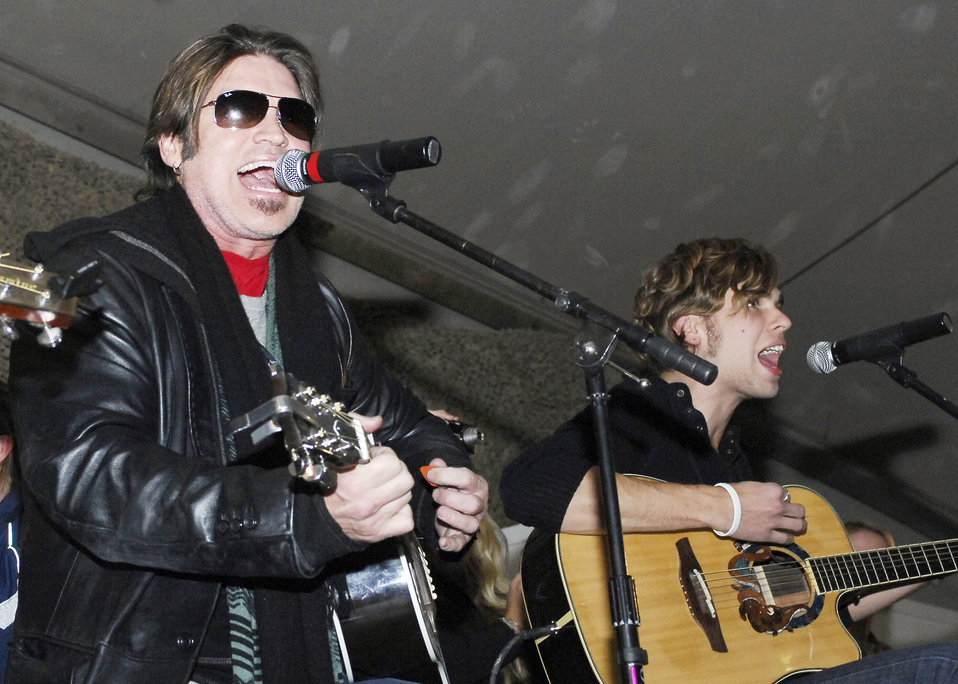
USO brings celebrities to Servicemen and women

Billy Ray Cyrus, singer/actor, entertains the Airmen, Soldiers, Sailors and Marines at Bagram Airfield during a United Service Organization tour Dec. 15, 2009. Mr. Cyrus, Dave Attell, Anna Kournikova, and Nick Bollettieri attended the USO tour to boost the morale of the servicemen and women. Mrs. Kournikova is a tennis pro originally from Russia and now lives in Miami, Fla. Mr. Attell, a comedian, is originally from Queens, N.Y. Mr. Cyrus hails from Flatwoods, Ky. Mr. Bollettieri, tennis coach/motivational speaker and hails from Pelham, N.Y.